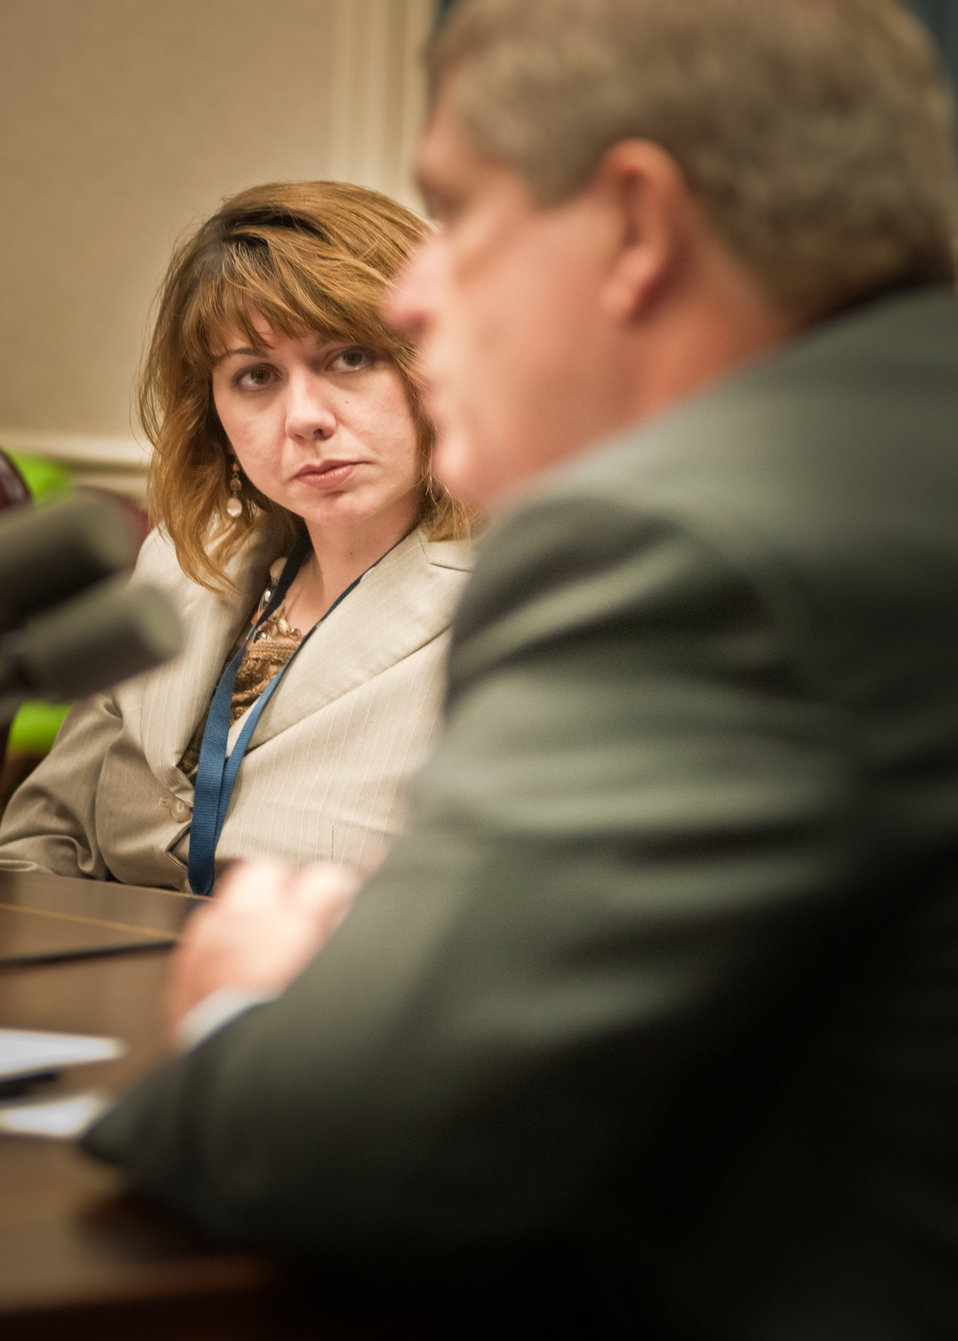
Lindsay Hill, Farm Journal Media and President of the National Association of Farm Broadcasters listens to Agriculture Secretary Tom Vilsack during a session at the United States Department of Agriculture during the annual National Association of Farm Broadcasters visit to Washington, DC, on Tuesday, May 5, 2011.